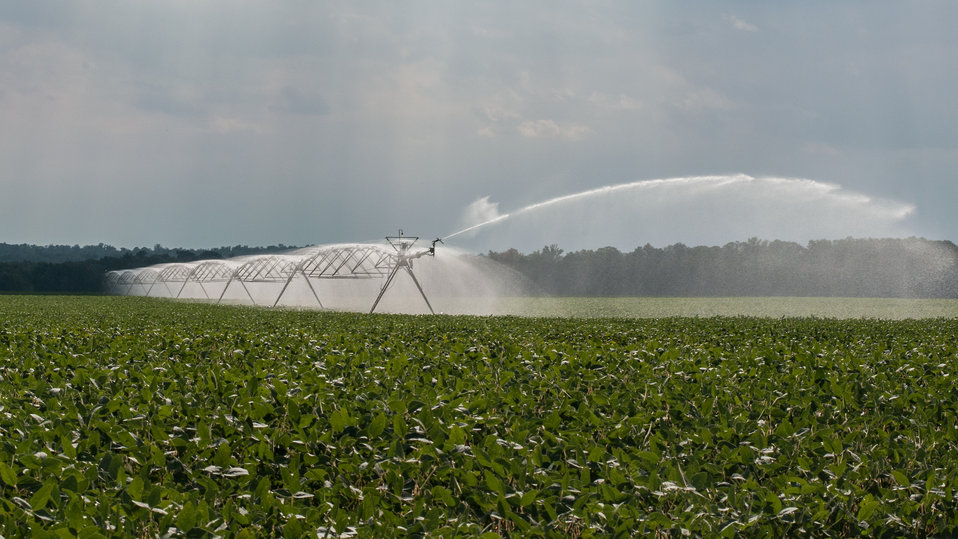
Pivot irrigation with rotating and end gun style pivot sprinkler in Hanover, Virginia, on Friday, Sept. 20, 2013.